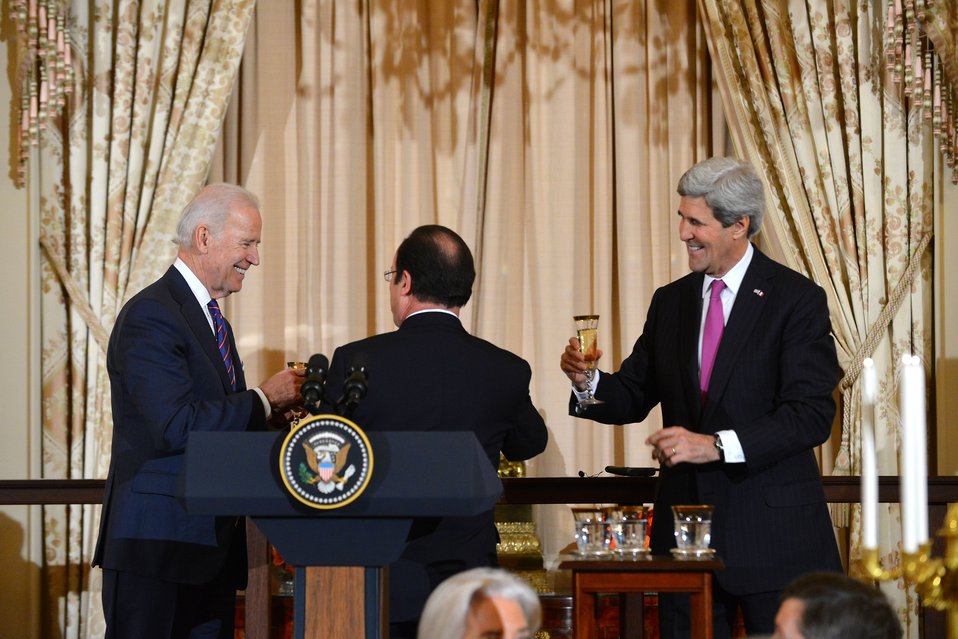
Vice President Biden, French President Hollande, and Secretary Kerry Toast the U.S.-France Relationship

Vice President Joe Biden, French President Francois Hollande, and U.S. Secretary of State John Kerry toast the U.S.-France relationship during a State Lunch in honor of President Hollande at the U.S. Department of State in Washington, D.C,, on February 11, 2014.